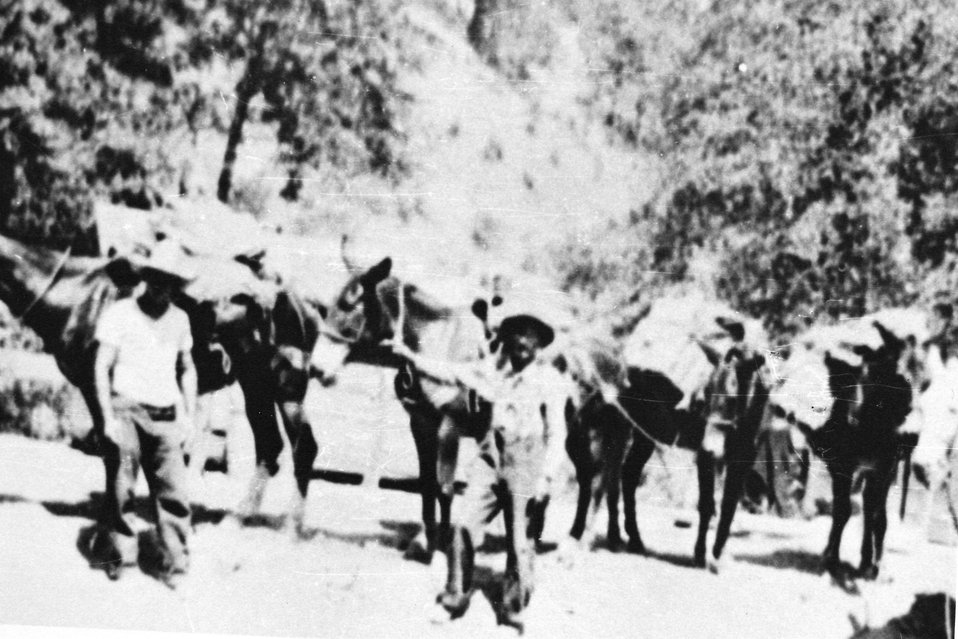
Pack Train.